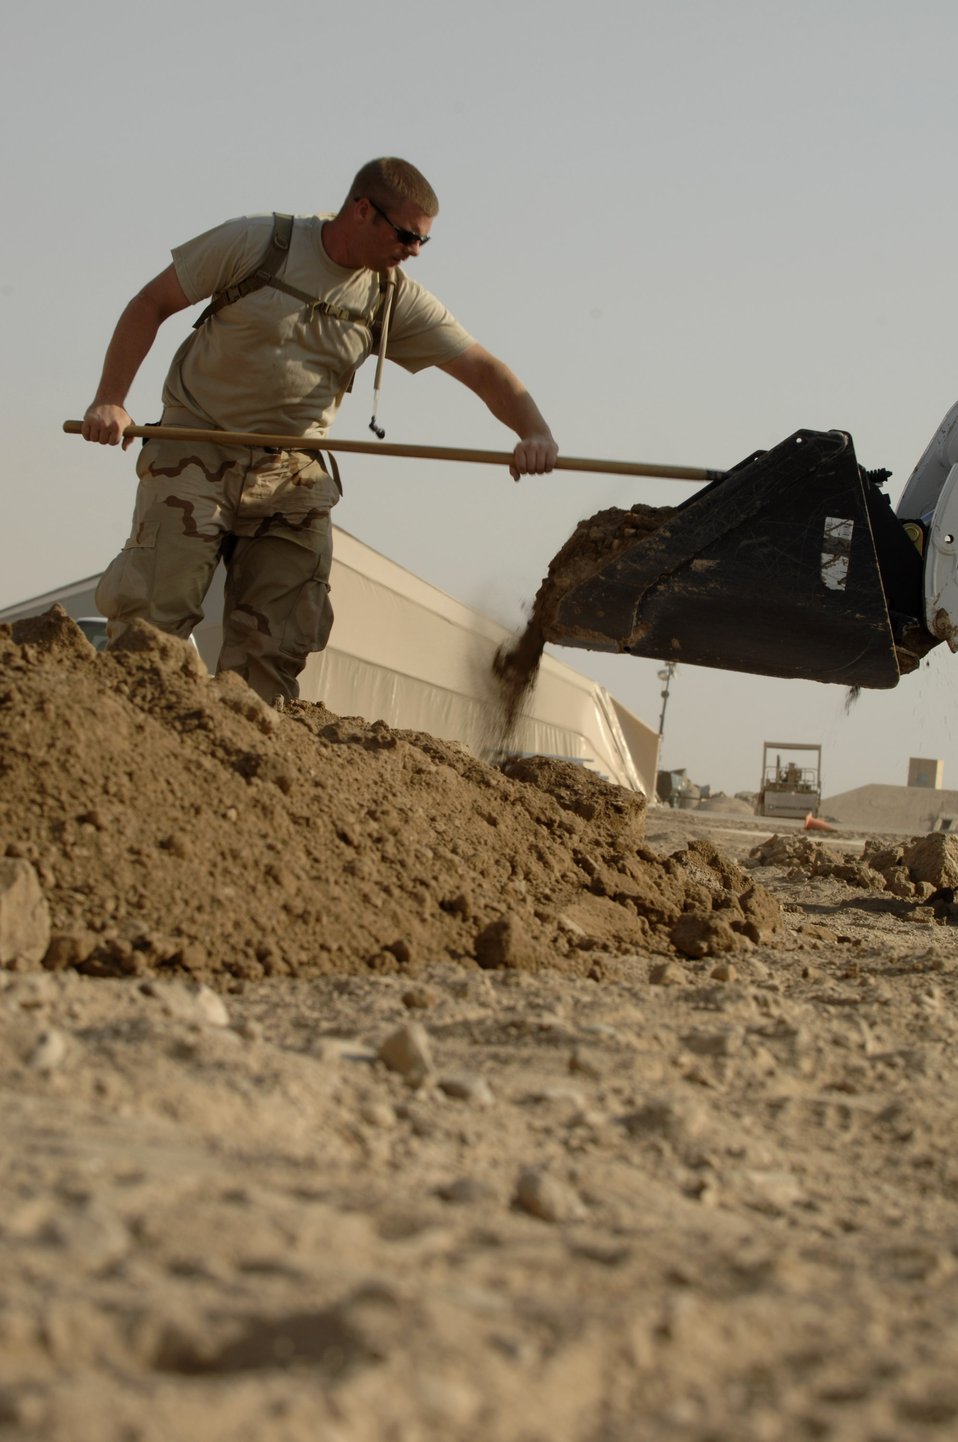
Down and Dirty

Senior Airman Mathew Mcdearmon spreads dirt Oct. 3 to help hold a wooden form in place prior to pouring a concrete footer for sun shades being installed on the Ali Base, Iraq, flightline. Airman Mcdearmon and other Airmen in the 407th Civil Engineer Squadron are working around the clock to build the sun shades by November.